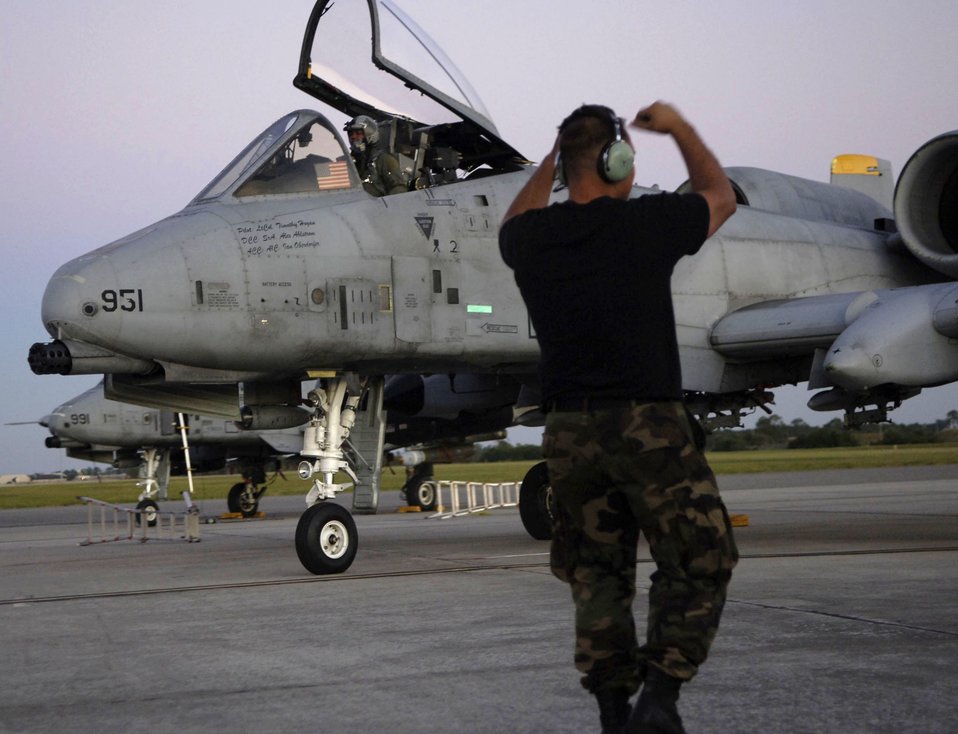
Close-air-support exercise tests Atlantic Strike participants

Senior Airman Alexander Ahlstrom directs an A-10 Thunderbolt II toward the aircraft taxi lane before takeoff Nov. 7 from MacDill Air Force Base, Fla. The A-10 is deployed to MacDill AFB to support exercise Atlantic Strike VI in Avon Park, Fla. Atlantic Strike is a U.S. Central Command Air Forces-sponsored exercise focusing on urban close-air-support operations. Airman Ahlstrom is a crew chief from Spandahlem Air Base, Germany.